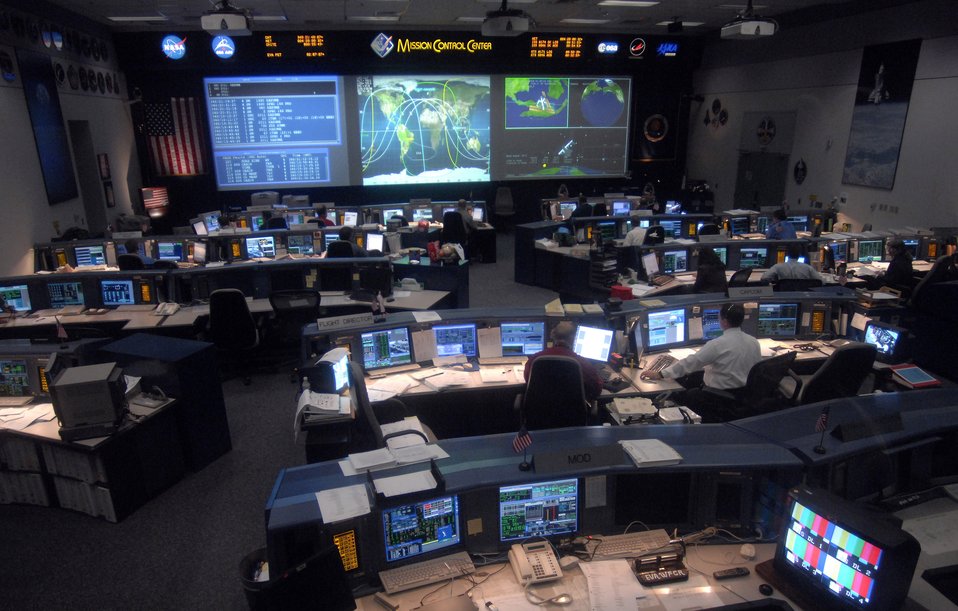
Airmen train to walk among the stars

Astronauts work in the Mission Control Center during a space shuttle mission to the International Space Center Dec. 15 at the Johnson Space Center in Houston.